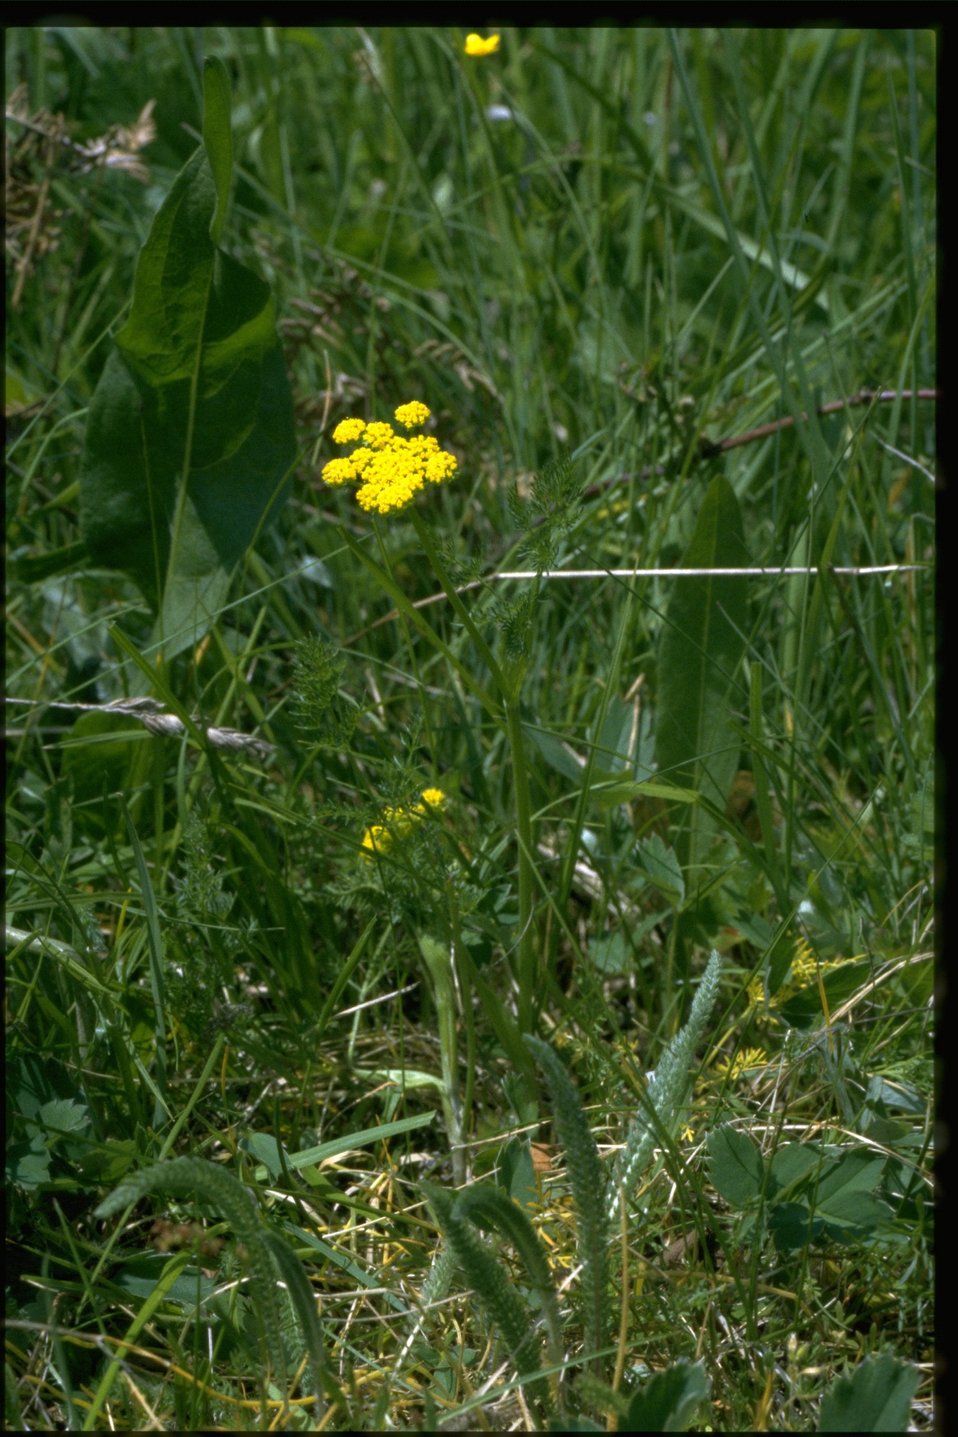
Farshot of Lomatium utriculatum.